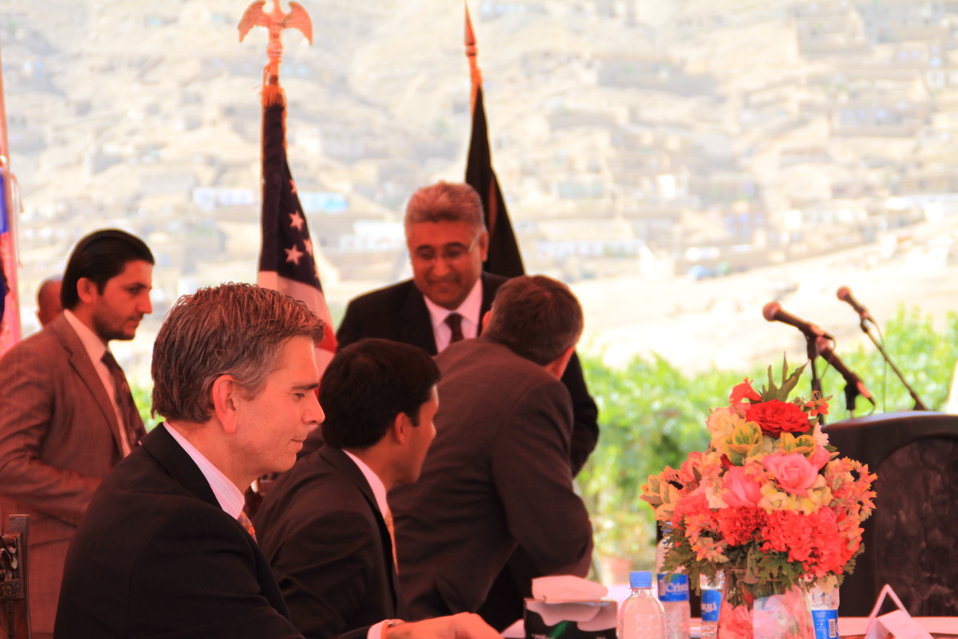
Badam Bagh Farm